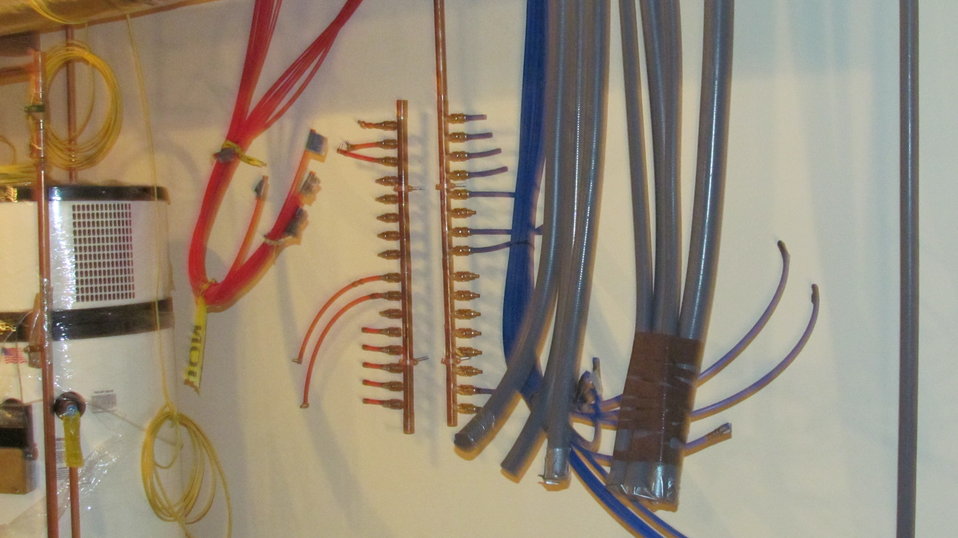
Start of installation of hot (orange) and cold (blue) water supply tubing to distribution manifolds. Solenoid valves will be installed to allow electronic control of the water usage within the home to mimic the water usage of a typical family of four.